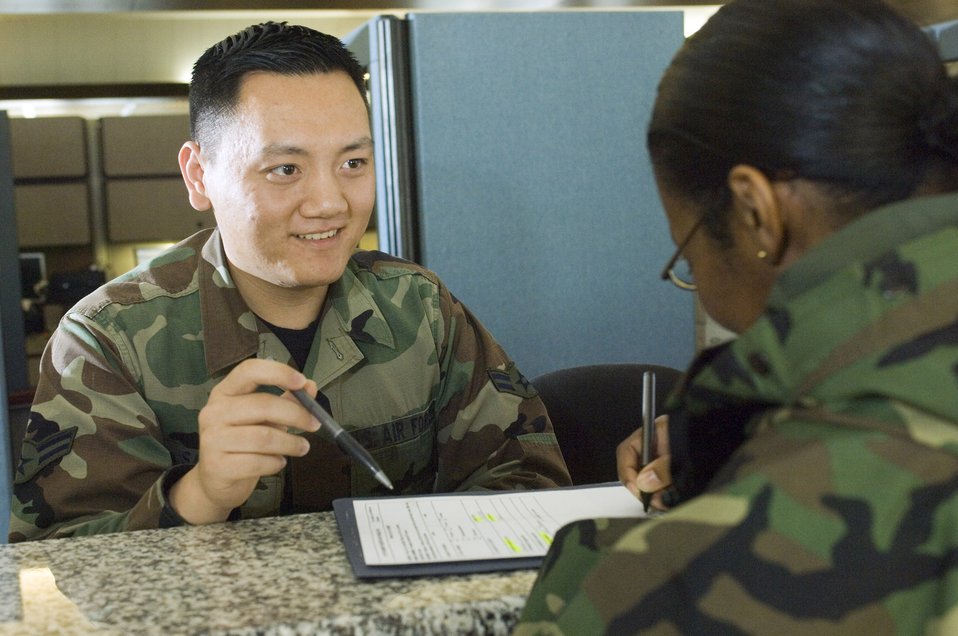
Finance technician

Airman 1st Class Michael Saechao clarifies an inprocessing form for a finance customer at Ramstein Air Base, Germany, on Tuesday, April 18, 2006. Airman Saechao is a financial customer service technician with the 435th Comptroller Squadron. Born in America to Thai parents, he joined the Air Force to travel.